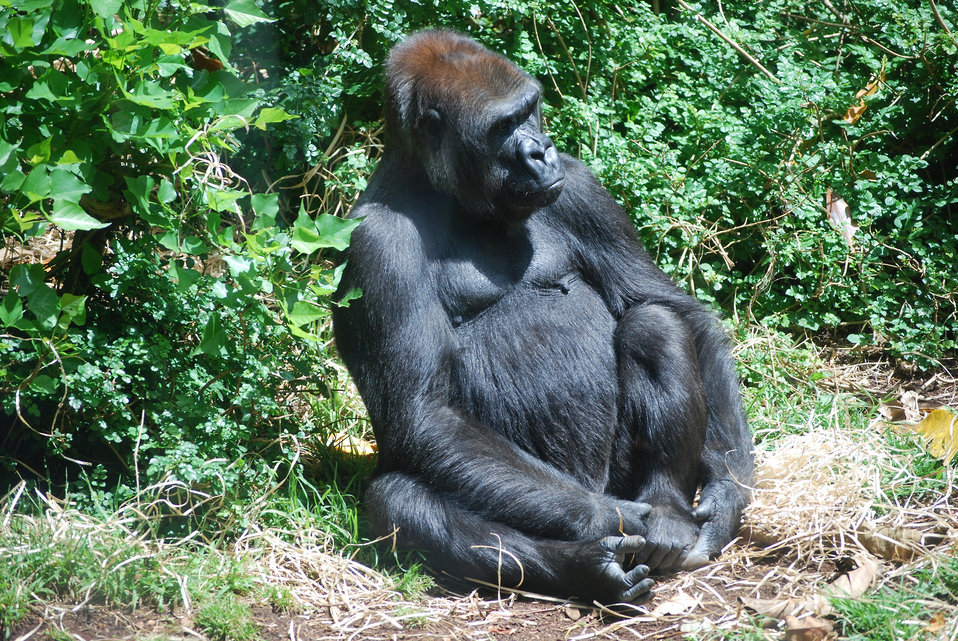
Gorilla resting at werribee park.